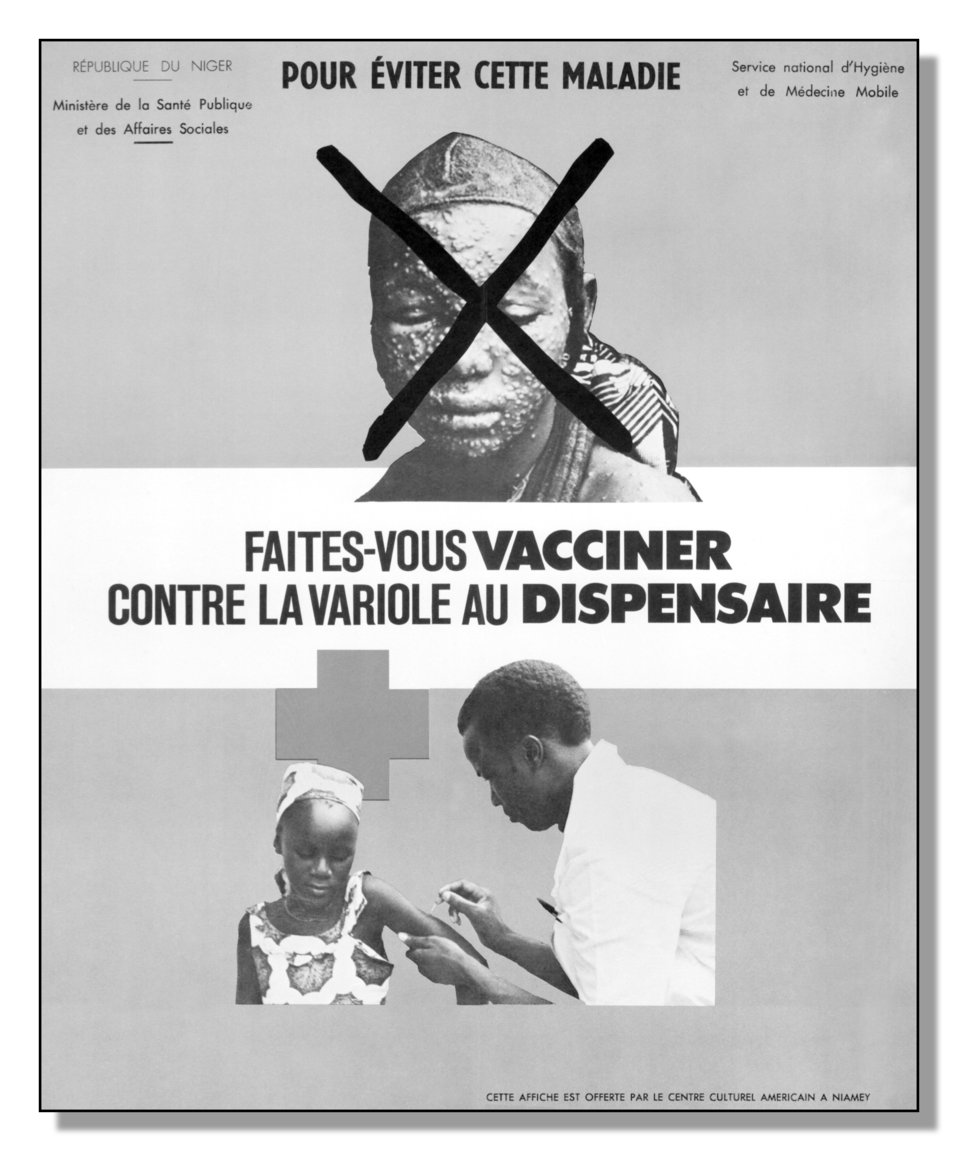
This foreign poster created prior to 1979, promoted the importance of Smallpox and Measles vaccination in the Republic of Niger.